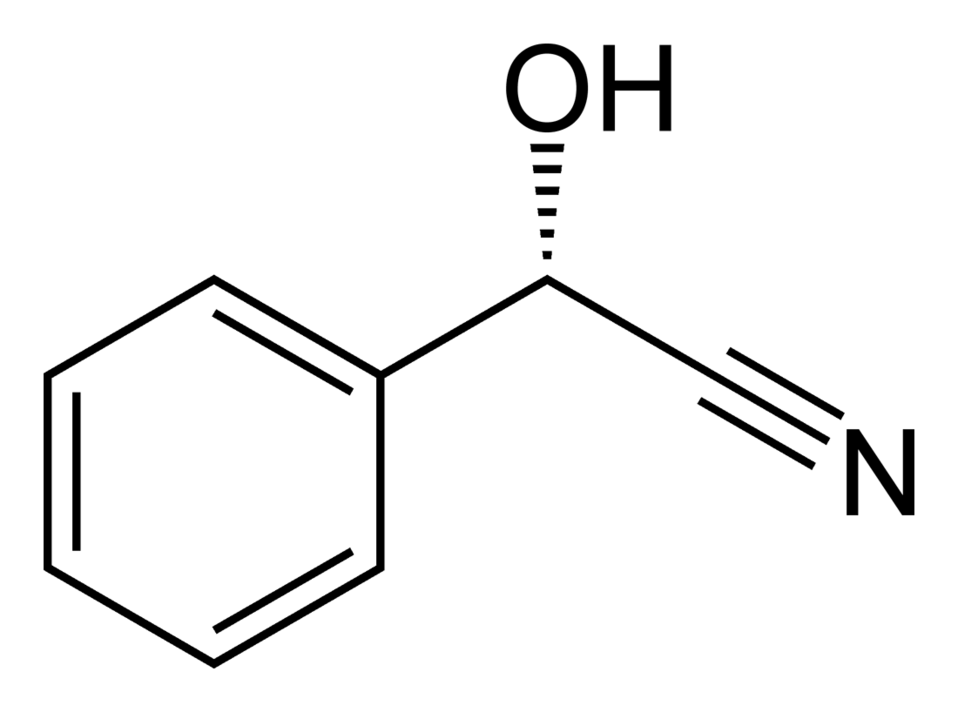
Skeletal formula of the (S) enantiomer of mandelonitrile, C8H7NO.